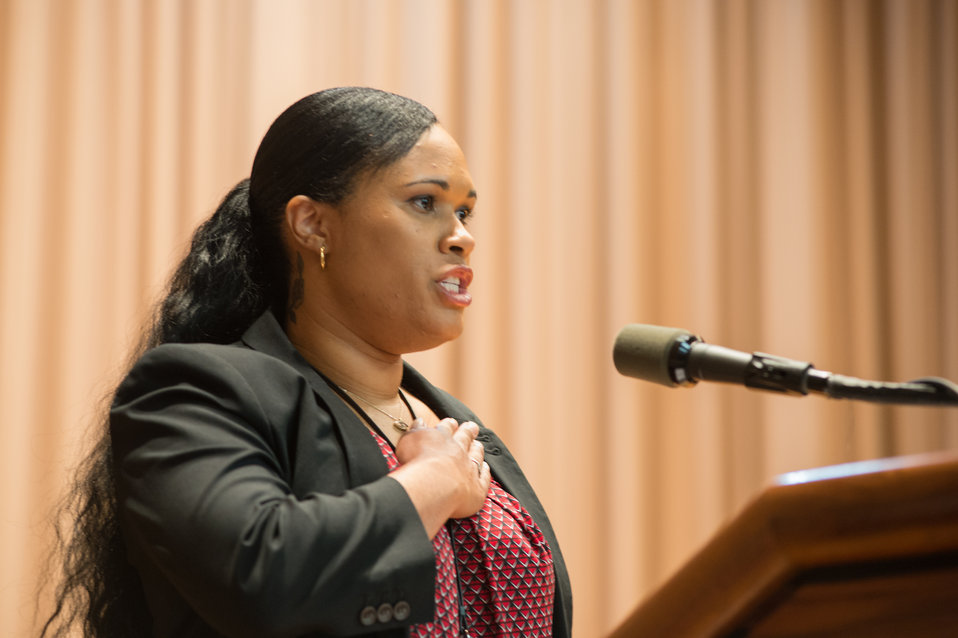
U.S. Department of Agriculture (USDA) Office of Civil Rights Brandy Billie leads participants in the Pledge of Allegiance at the Asian Pacific American Heritage Observance at USDA in Washington, D.C. on Thursday, May 22, 2014.